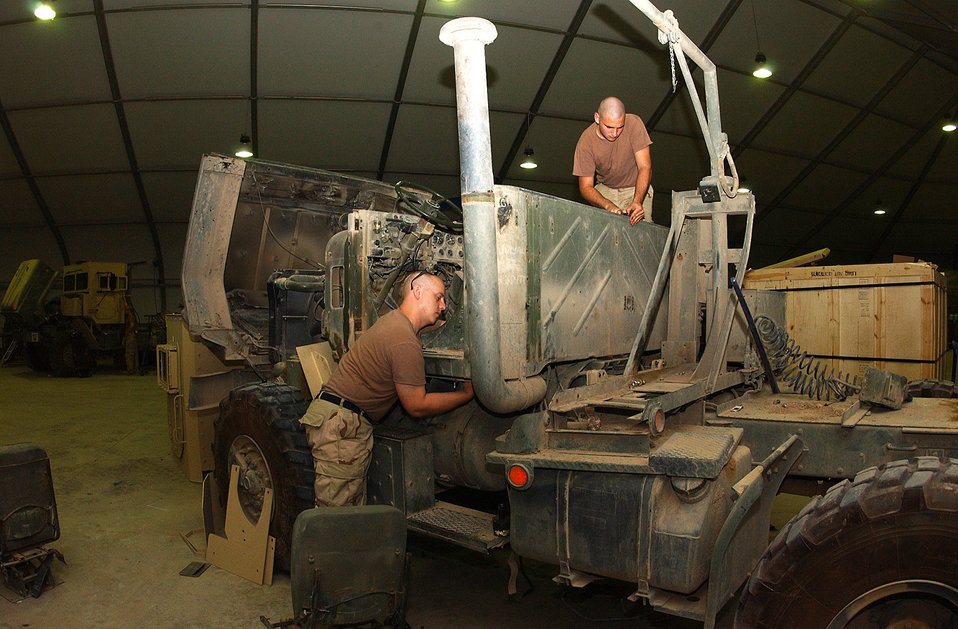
Airmen add armor to convoy vehicles

BALAD AIR BASE, Iraq -- Airman 1st Class Joshua Paden (left) installs armor plating to the floor of a vehicle while Airman 1st Class William Hampton prepares to install a rear cab seal here June 23. The Airmen are vehicle maintainers assigned to the 732nd Expeditionary Mission Support Group's add-on armor shop.